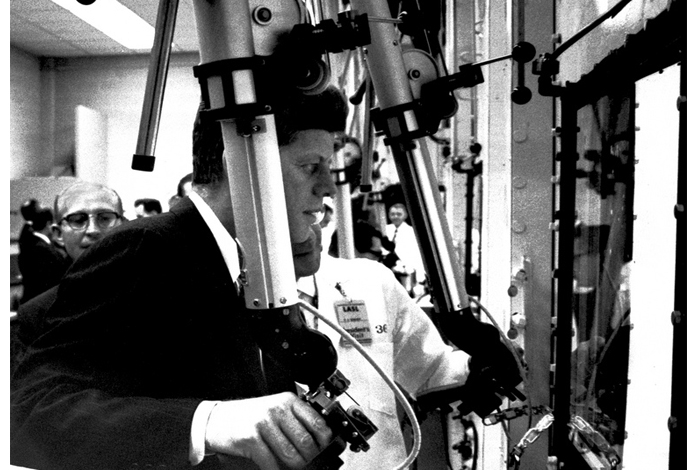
PRESIDENT JOHN F. KENNEDY VISITS AREA 400 MAD BUILDING AT LOS ALAMOS IN 1962.